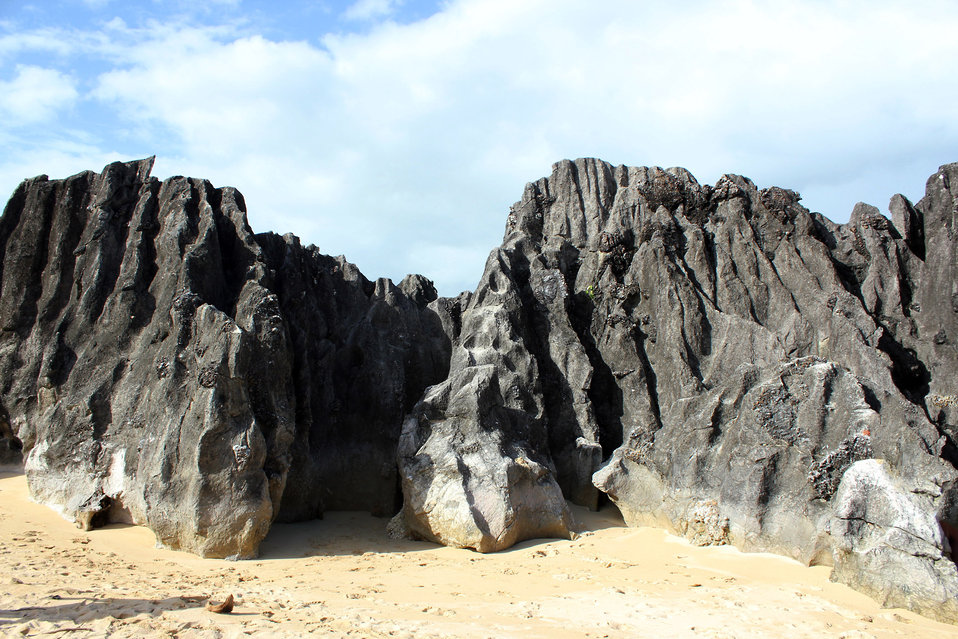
The stones 01

Big live stones.